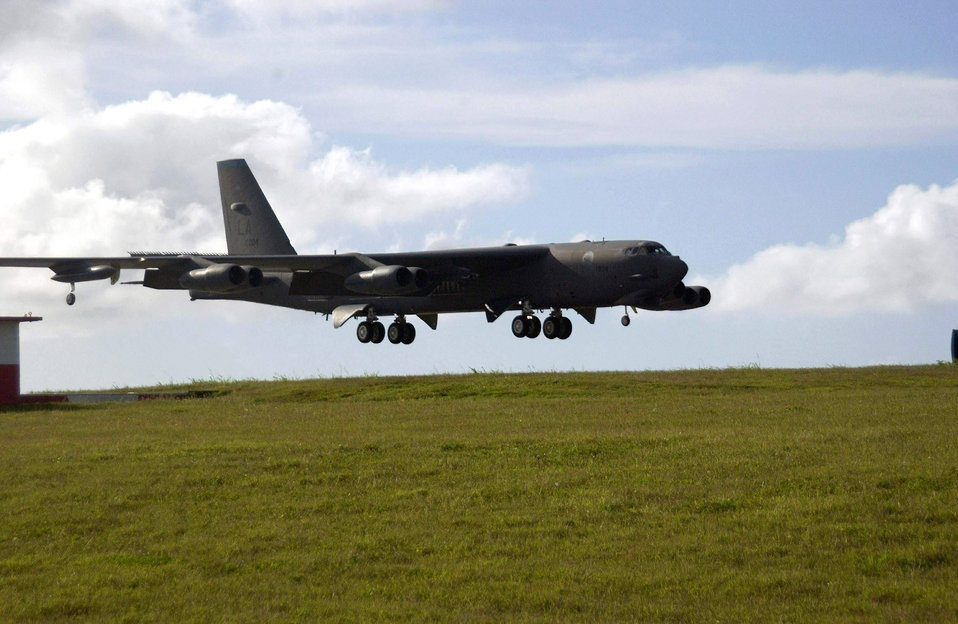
Barksdale B-52s arrive in Guam, complete bomber rotation

A B-52 Stratofortress arrives on Andersen Air Force Base, Guam, Feb. 1 following a 17-hour flight from its home unit at Barksdale AFB, La. Six B-52s from the 2nd Bomb Wing arrived in Guam recently as part of a scheduled rotation of bomber units into the Pacific theater.